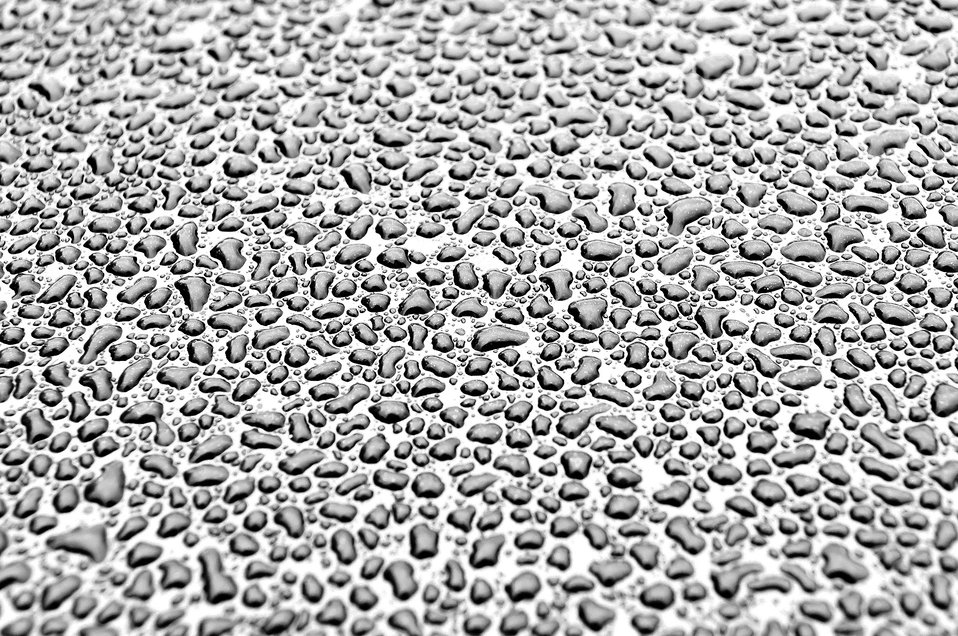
Raindrops - background.